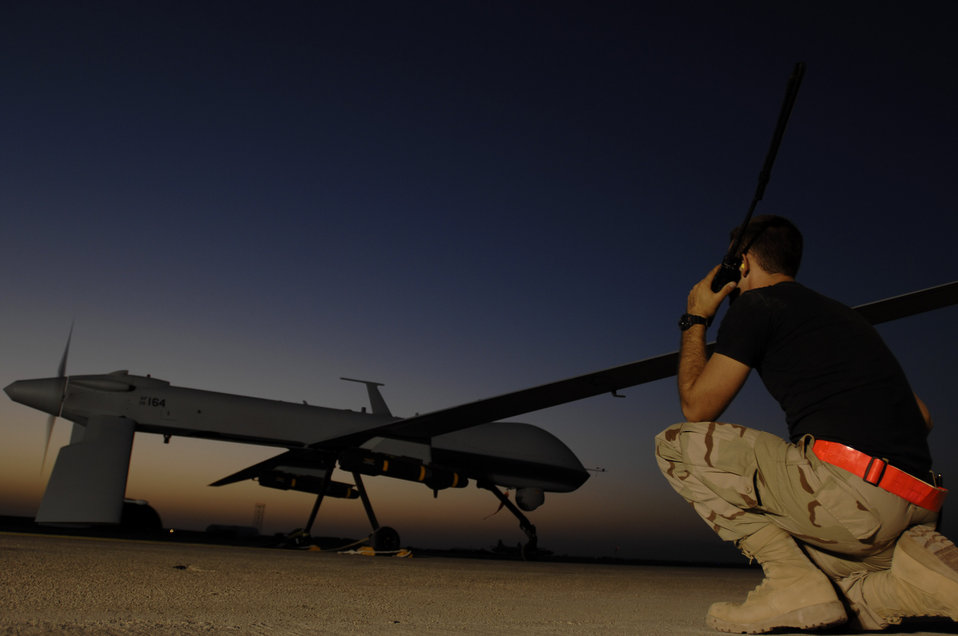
Nighttime Predator

Airman 1st Class Justin Cole communicates with the pilot of an MQ-1 Predator Unmanned Aerial Vehicle in preparation for a night mission Nov. 5 at Ali Base, Iraq. The Predators are now fully operational and have begun 24-hour operations. Airman Cole is deployed from Creech Air Force Base, Nev.